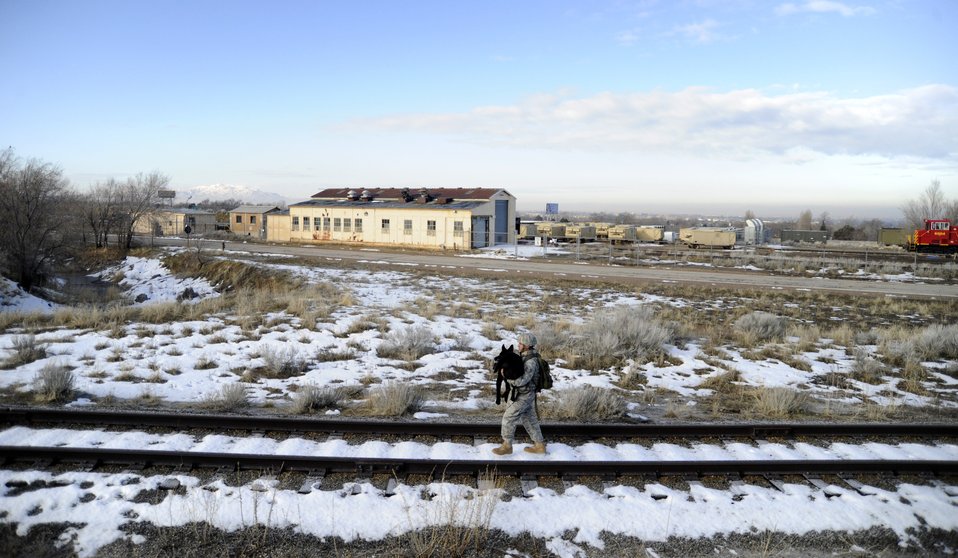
Building loyalty and trust

Staff Sgt. Erick Martinez, a military dog handler, carries Argo II March 4, 2011, during an exercise at Hill Air Force Base, Utah. The exercise is designed to build loyalty, trust and teamwork between the K-9s and their handlers.